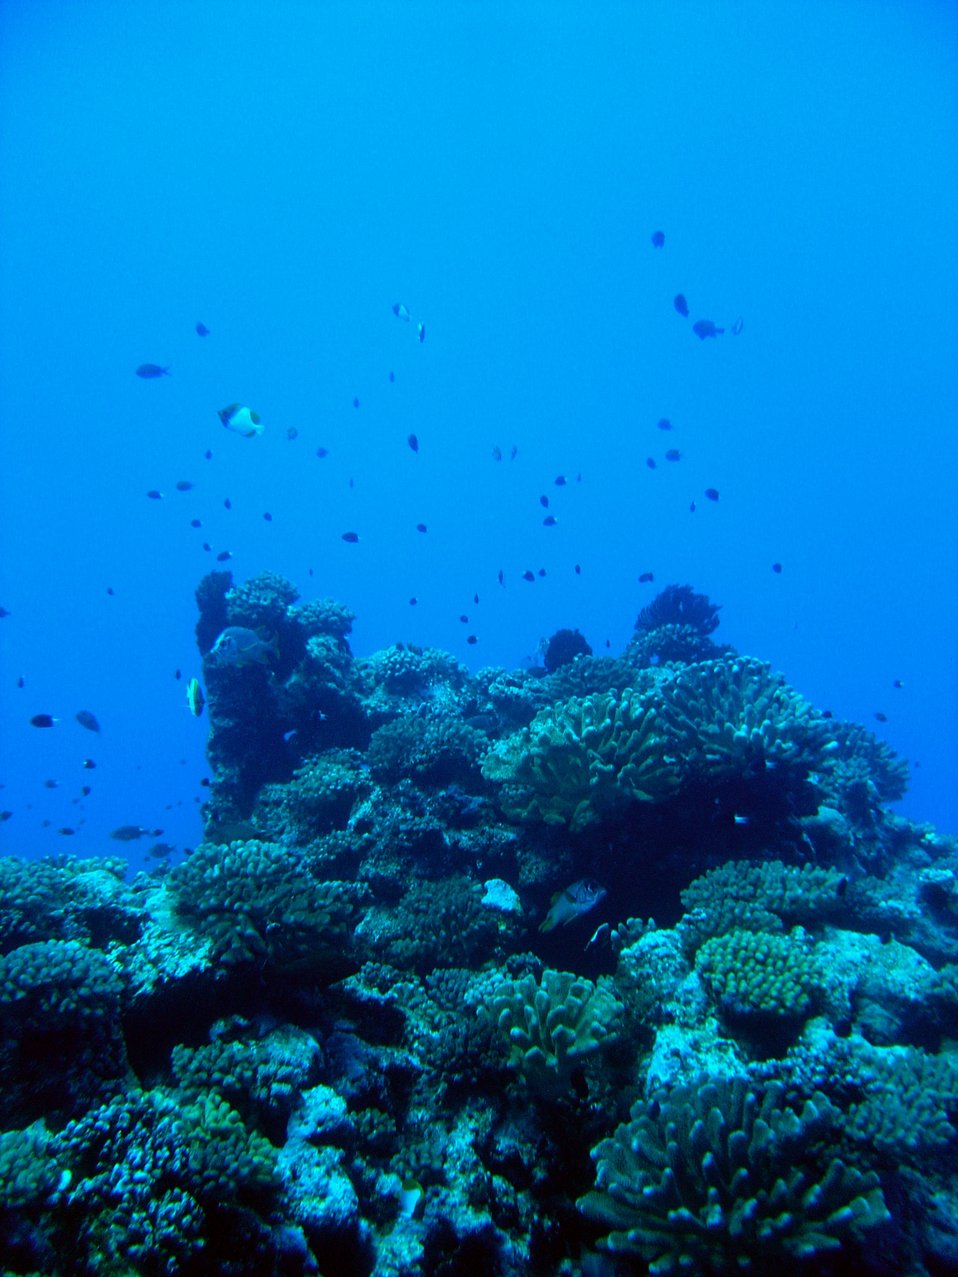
Reef scene with reef fish